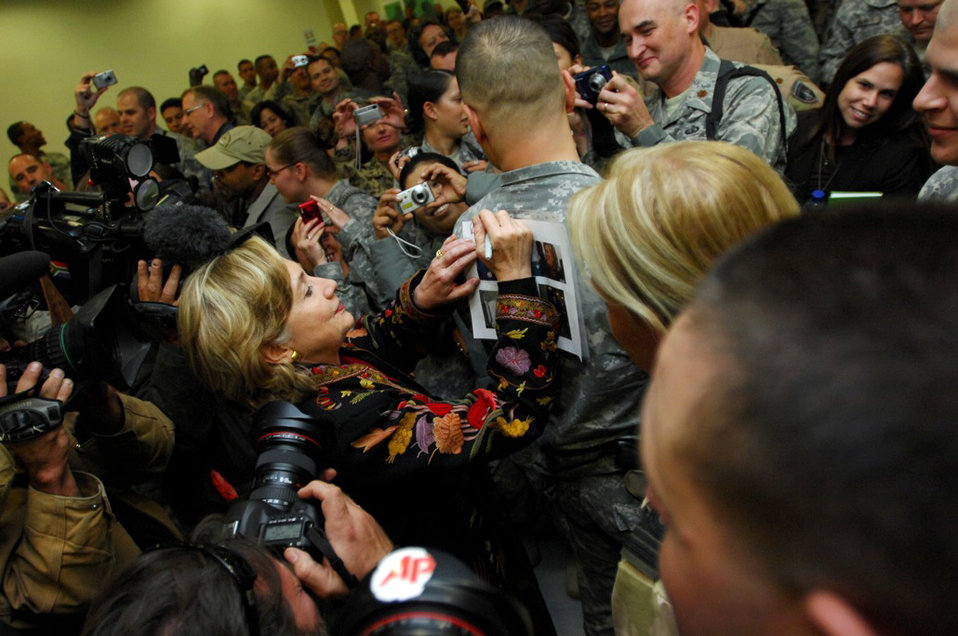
Secretary Clinton Travels to Afghanistan

U.S. Secretary of State Hillary Rodham Clinton signs soldiers' photos at the U.S. Embassy in Kabul, Afghanistan November 19, 2009. Secretary Clinton traveled to Afghanistan to attend President Hamid Karzai's November 19, 2009 inauguration ceremony, meet with Afghanistan's leadership, international partners and allies, U.S. troops, staff in Provincial Reconstruction Teams, and Embassy staff.